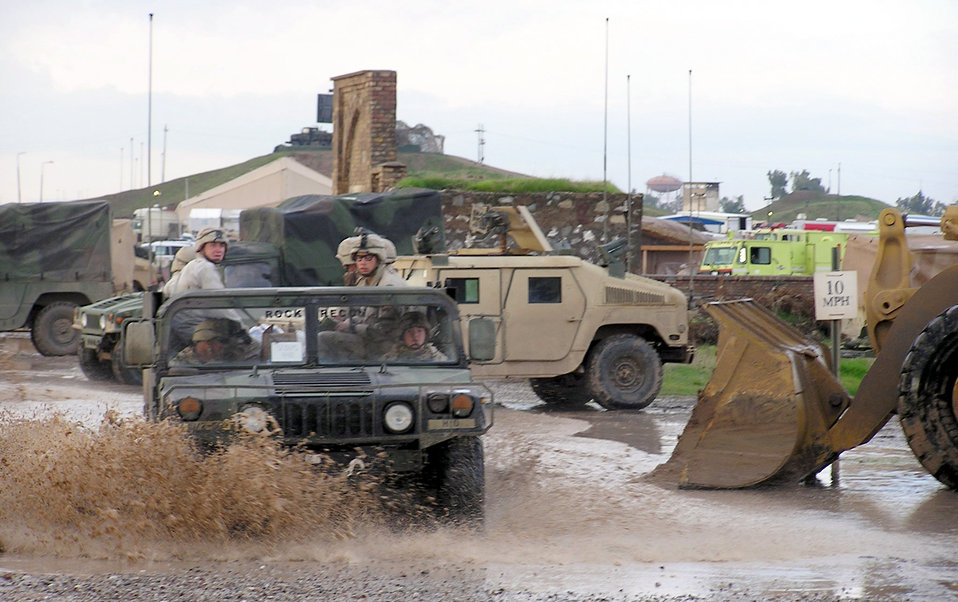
Water world

KIRKUK AIR BASE, Iraq -- A vehicle filled with soldiers makes its way down a flooded road here Jan. 13. The base was hit by nearly 2 inches of rain overnight leaving many areas of the base, including tents for airmen and soldiers, deluged by water.